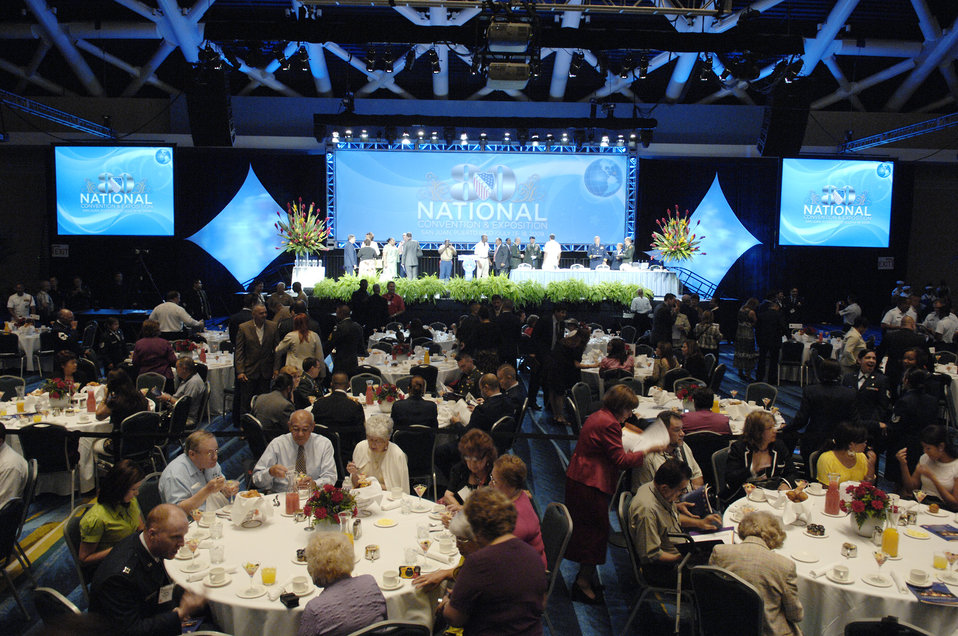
LULAC, DOD honor citizen warriors at awards breakfast

The Department of Defense and LULAC Awards Breakfast held July 16 here honored 12 military members whose activities best support the ideals of duty, honor and country. LULAC is the oldest and largest Hispanic organization and has been advocating for Latinos in the U.S. for 80 years.